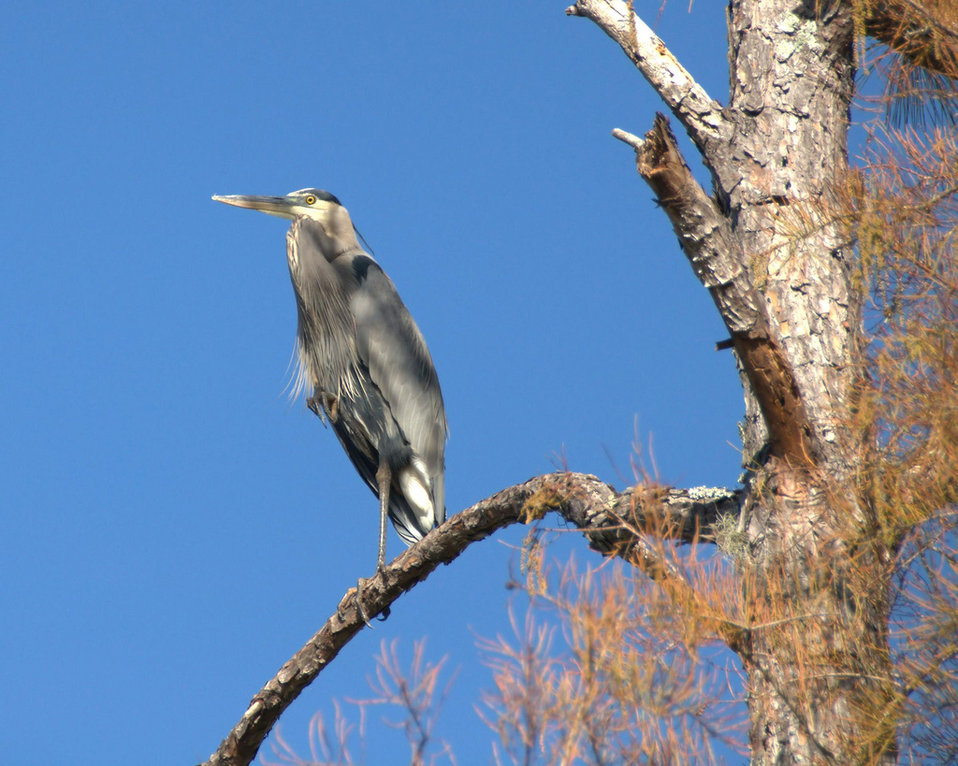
great blue heron and blue sky

Okefenokee National Wildlife Refuge, GA
wilderness canoe trip, Nov. 11-13, 2010